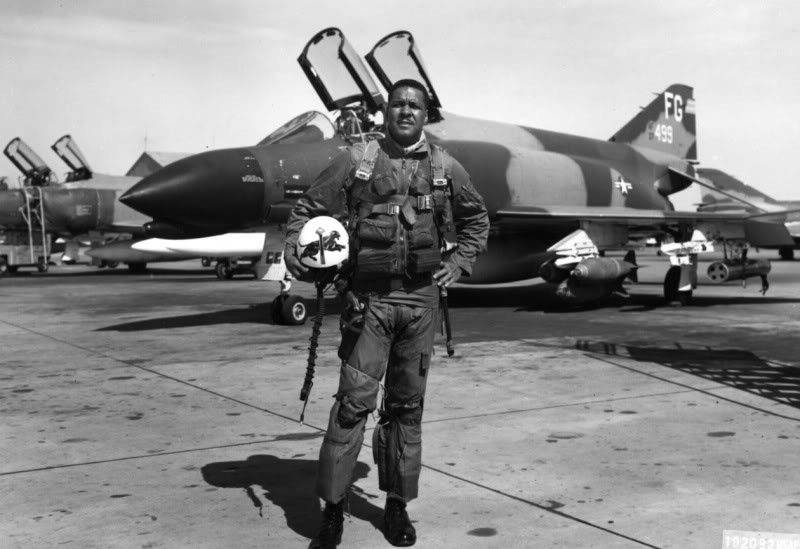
Gen. Daniel

Daniel